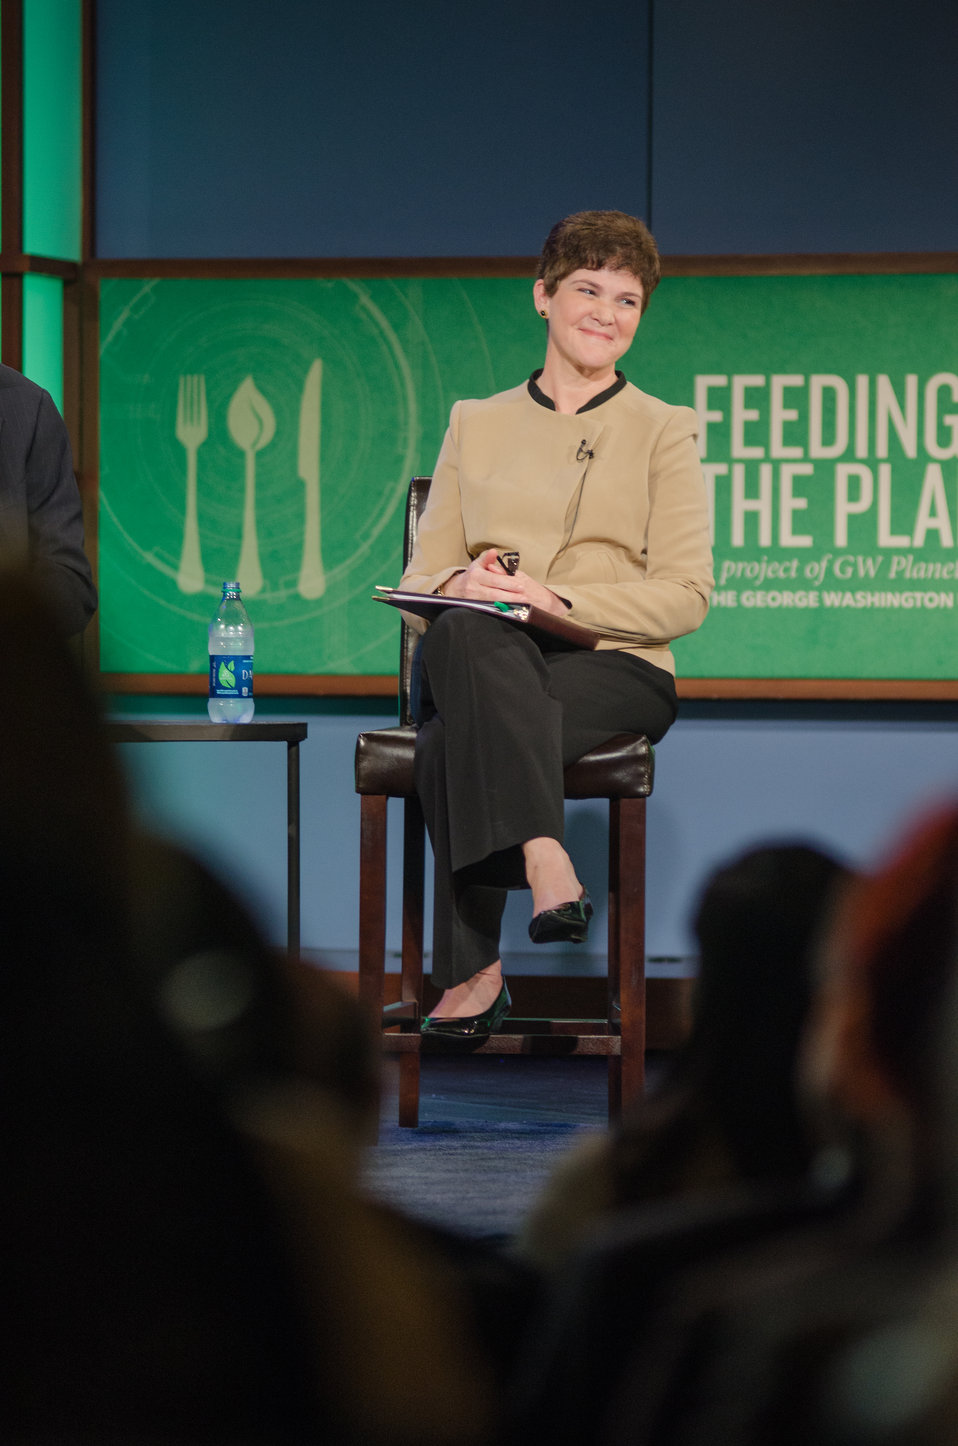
Krysta Harden, Deputy Secretary of Agriculture sits on the discussion panel “Policy, Palate, and the Plate-Innovation and how policy can impact practice at the Feeding the Planet Summit of leaders from agriculture, business, finance, academia, Non Governmental Organization, government and media, along with a large contingent of college students to engage around promising innovations in global agriculture and food security. The Summit spotlights transformation and scalable developments in policy, practices and technologies with special attention to related issues of gender, climate change and urbanization at The George Washington University in Washington, DC, on Wednesday, Oct. 31, 2013.